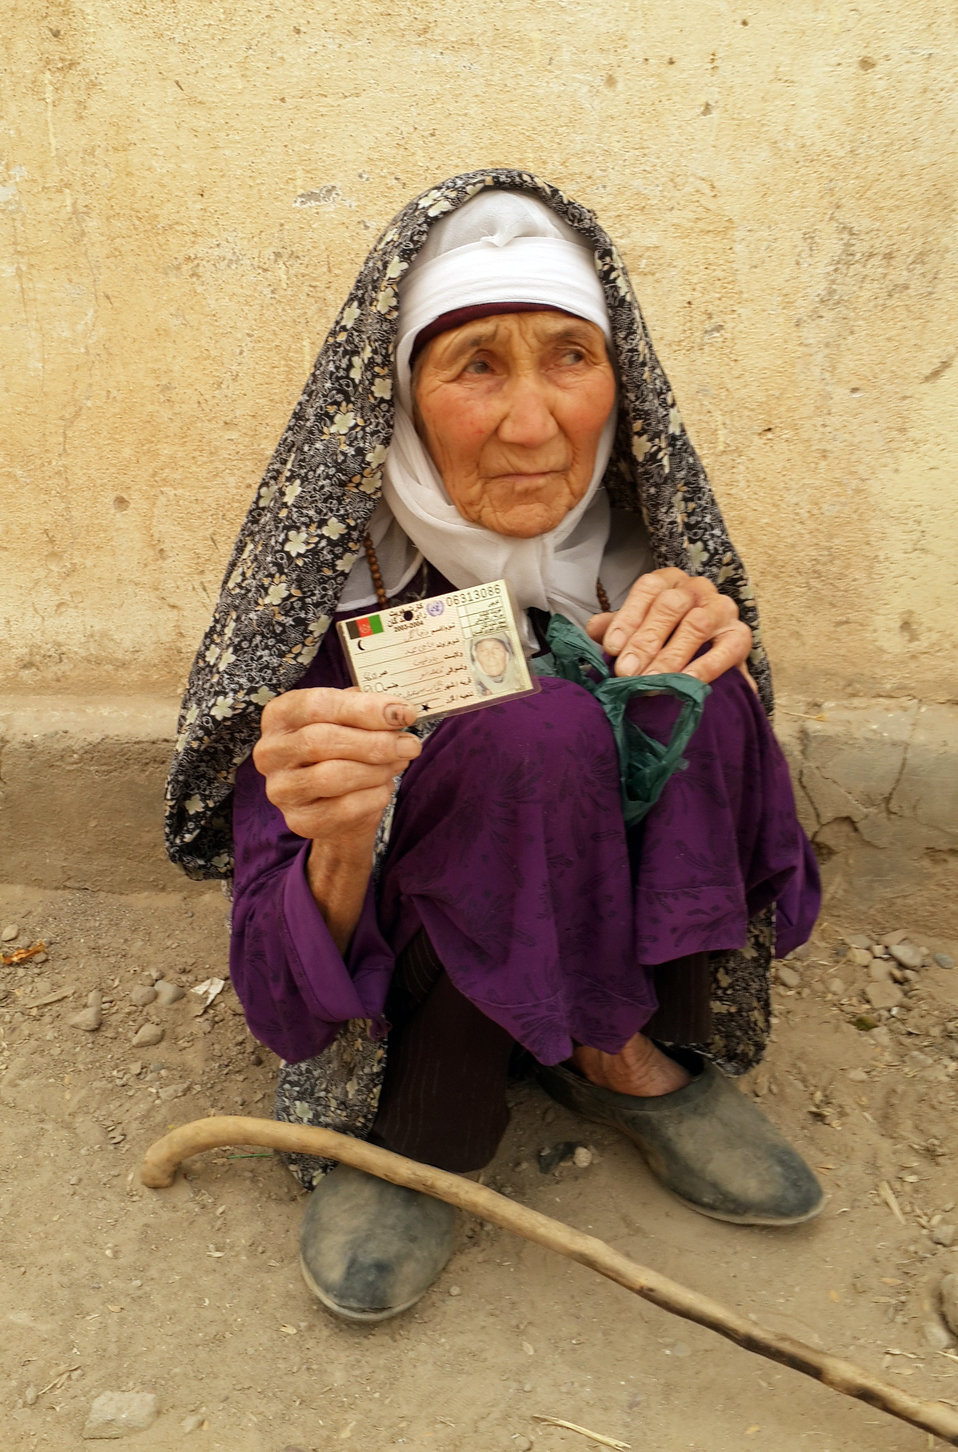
An elderly woman posing for a photo after casting her vote in Badghis province.